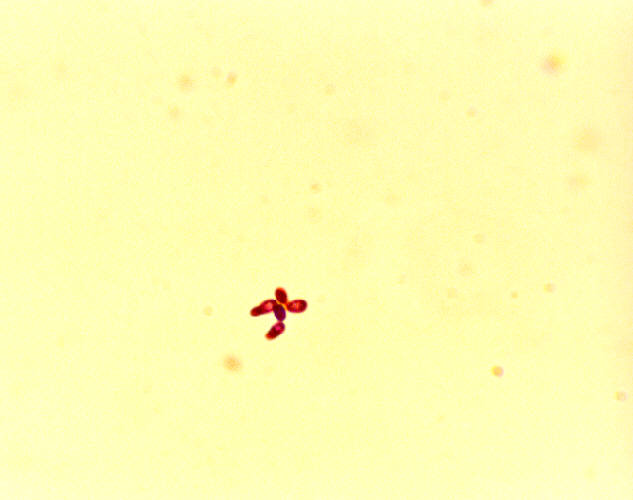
This Gram-stained photomicrograph depicts numbers of Malassezia pachydermatis fungal organisms.